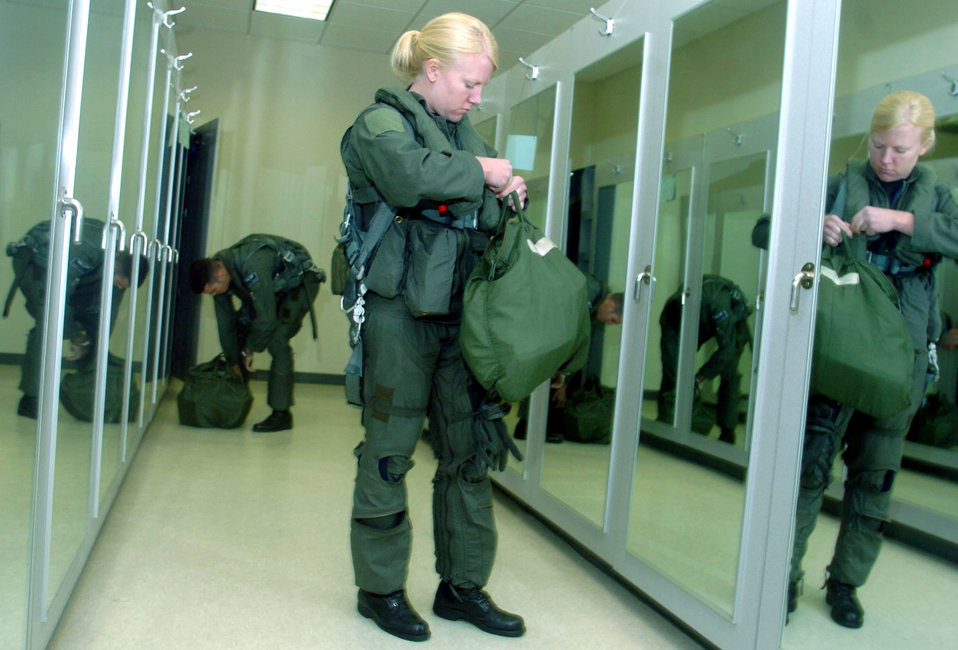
Kunsan provides strong foundation for F-16 pilots

KUNSAN AIR BASE, South Korea -- First Lts. Amy Ringwald (foreground) and Wyatt Morrise suit up in a life-support section here for a flight. They are F-16 Fighting Falcon pilots assigned to the 35th Fighter Squadron.